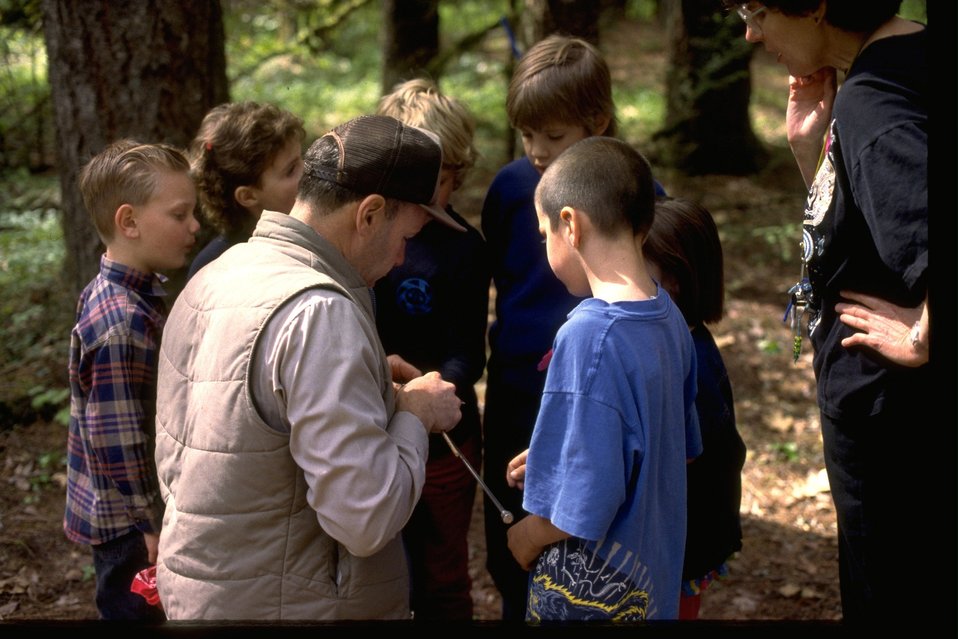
Wolf Creek Elementary students are learning environmental education.